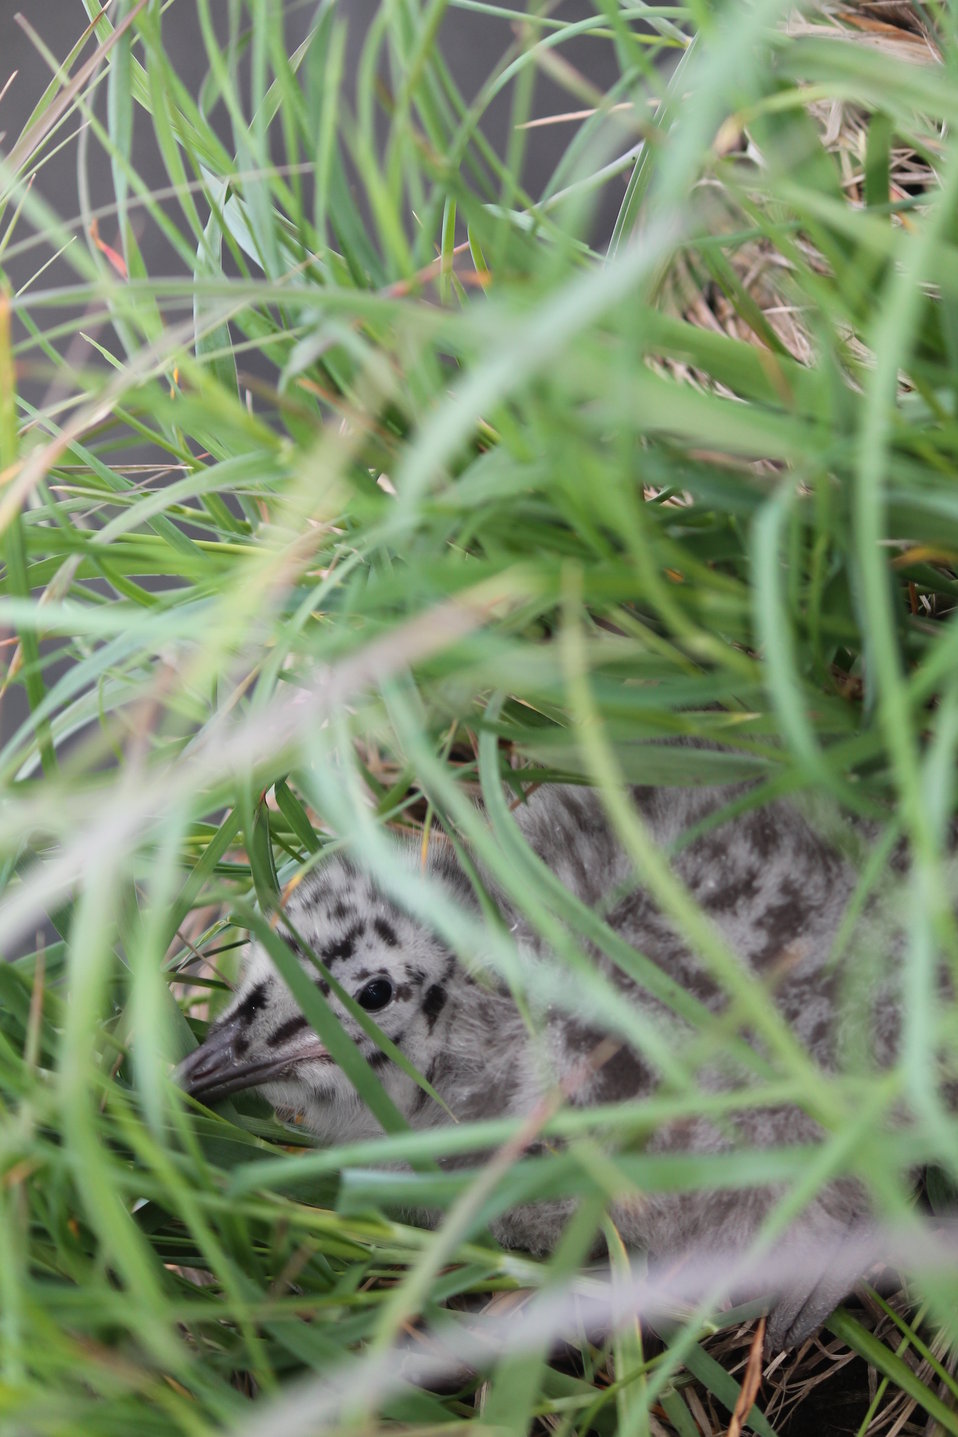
Peek-a-boo

This gull chick is hiding in the grass. During hatch if you stumble across a family with young the little ones tend to scatter. Not gulls...their young hunker down wherever they are at and pretend that you can not see them.

USFWS Yukon Delta NWR